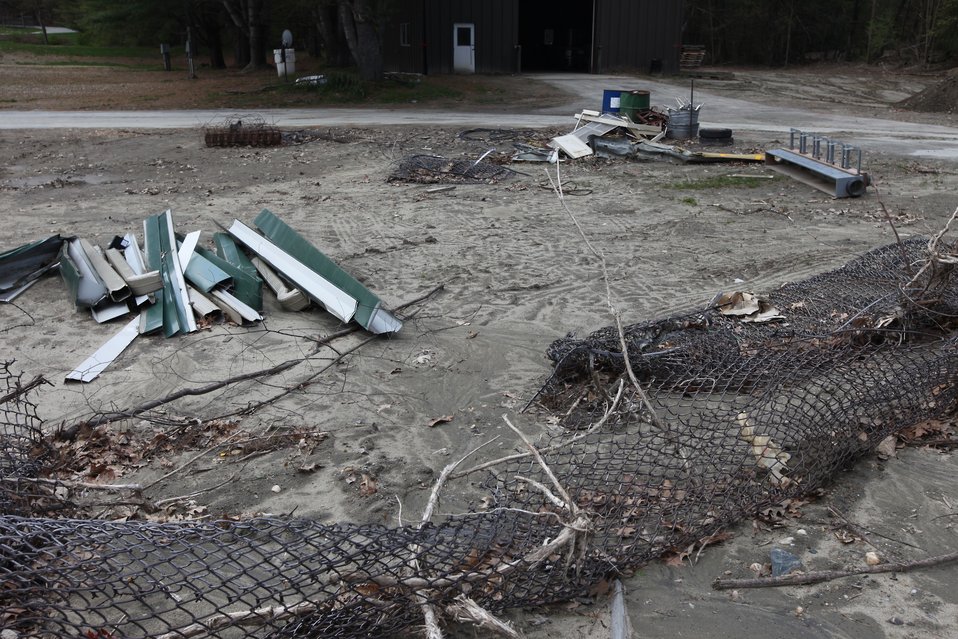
Tropical Storm Irene damage

U.S. Fish & Wildlife Service Director Dan Ashe visits the Northeast Region
for a tour of the White River National Fish Hatchery in Bethel, Vermont on
April 27, 2012. The hatchery was devastated by Tropical Storm Irene and
Dan Ashe had the chance to meet and thank the staff for their heroic work.
Director Ashe also visited restoration/flood response/fish passage project
sites in Rochester, Vermont and met with local officials and staff from the
White River Partnership.